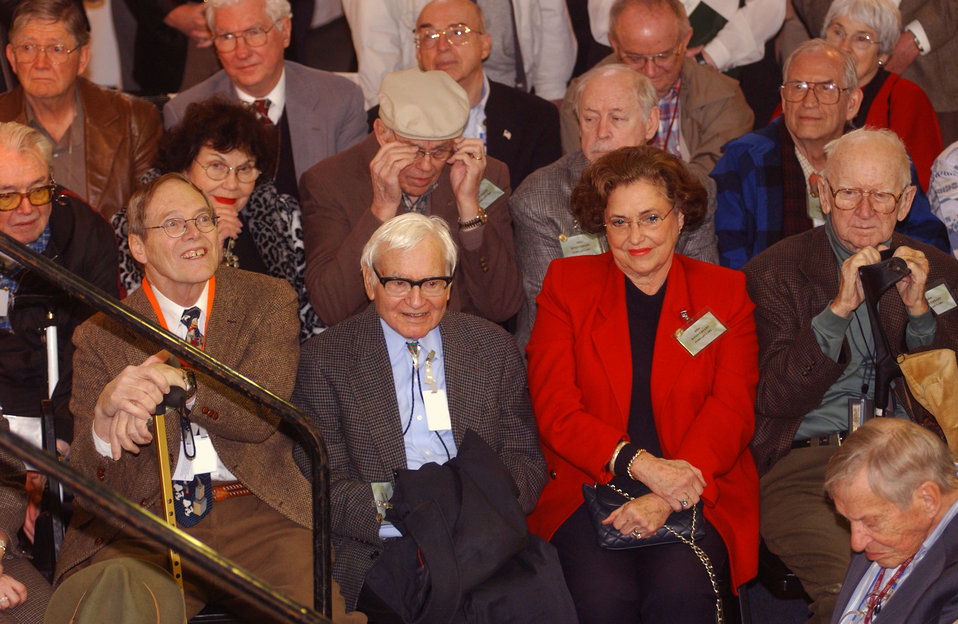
60th Anniversary ORNL Graphite Reactor

03-027 DOE photo by Lynn Freeny 2003 Oak Ridge Tennessee